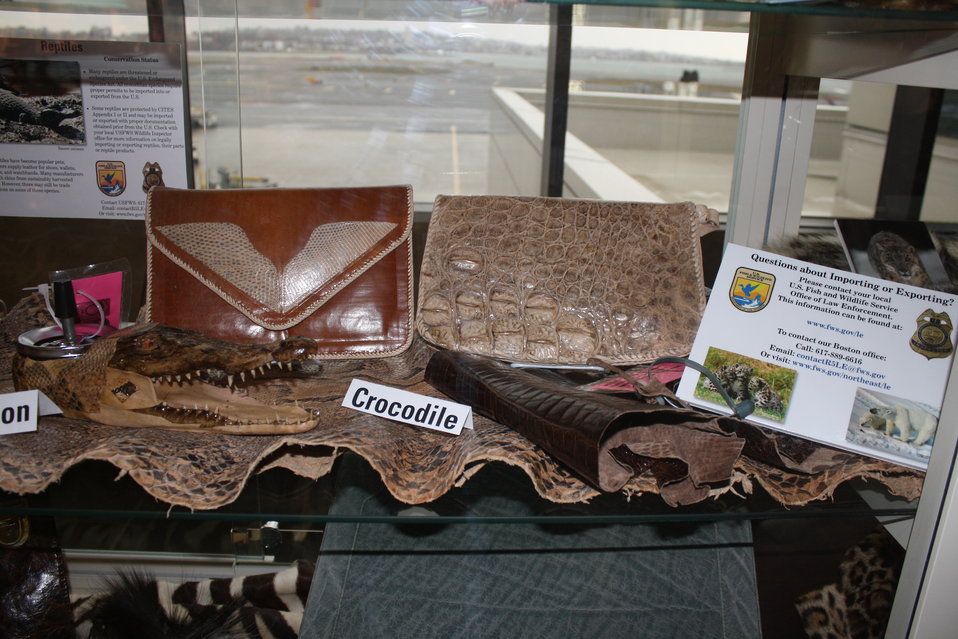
Reptile Products